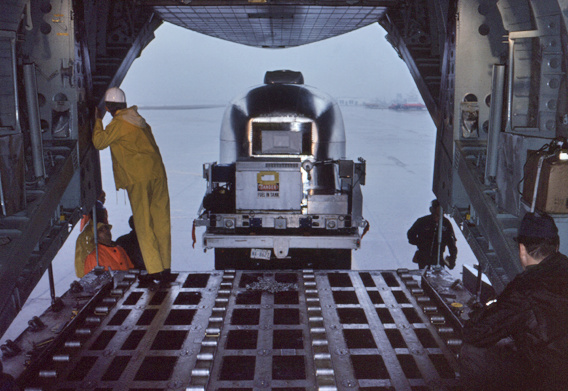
This 1976 photograph showed technicians that were loading a mobile quarantine facility (MQF) into an aircraft that was on its way to Atlanta, Georgia.